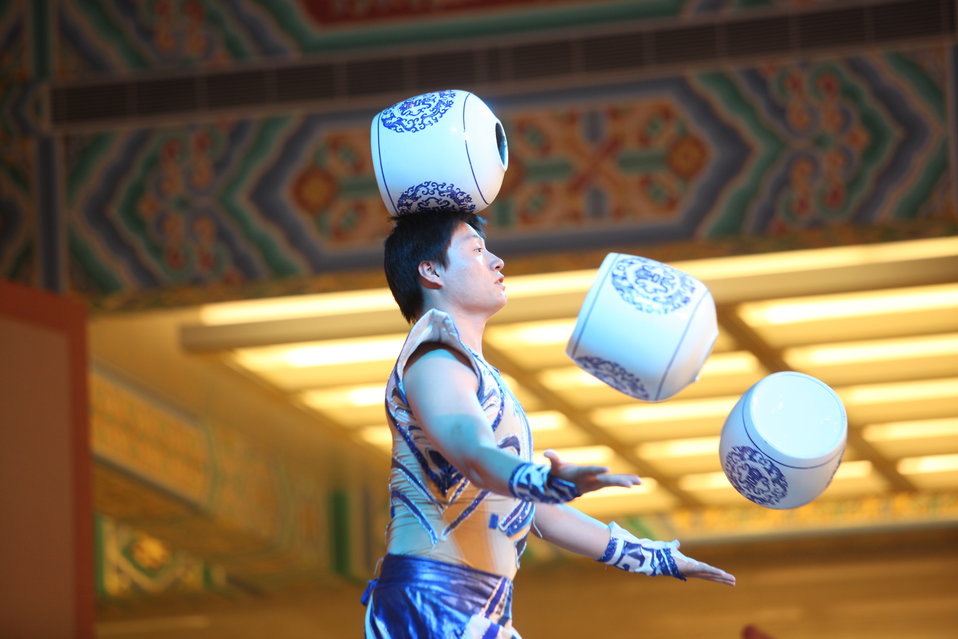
SandED 5/25/10

Performance at the S&ED Welcoming Dinner.